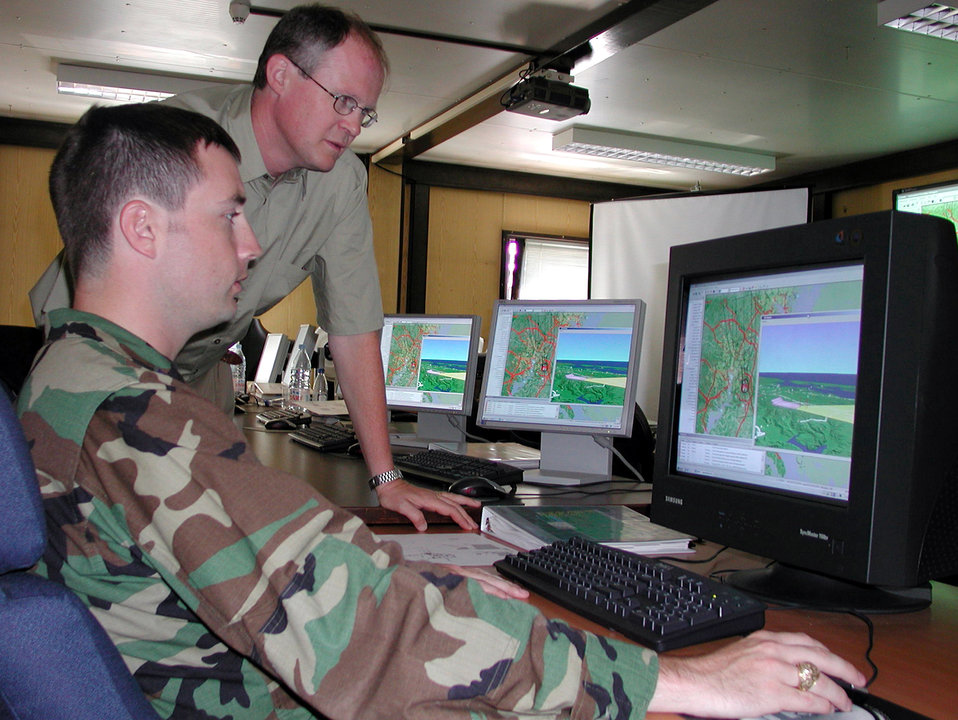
RAMSTEIN AIR BASE, Germany -- Capt. Mack Coker (foreground) learns how to use the Global Procedure Designer with the help of Iain Hammond, a systems engineer for MacDonald Dettwiler. The GPD is a new software-based program providing terminal instrument procedures specialists with a better evaluation of obstacles and terrain in the arrival and departure path for aircraft. Captain Coker is the air procedures flight commander for U.S. Air Forces in Europe.